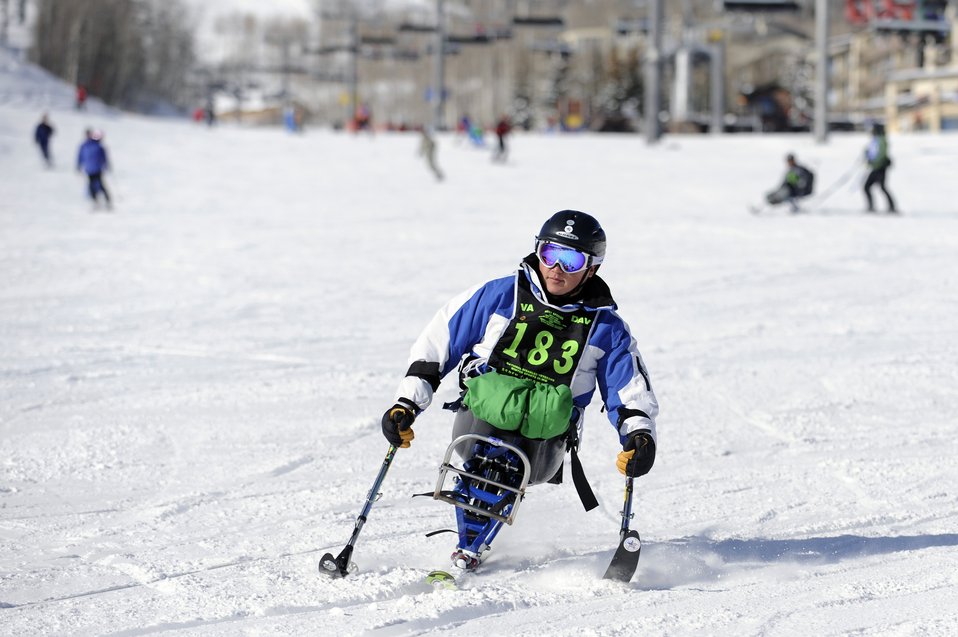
23rd National Disabled American Veterans Winter Sports Clinic

Senior Airman Kevin Krogh mono-skis Apr. 2 during the 23rd National Disabled American Veterans Winter Sports Clinic in Snowmass Village, Colo. Airman Krogh lost both legs in a major car accident in 2007 and this is his first year attending the sports clinic. Airman Krogh is assigned to Fort Sam Houston in San Antonio.